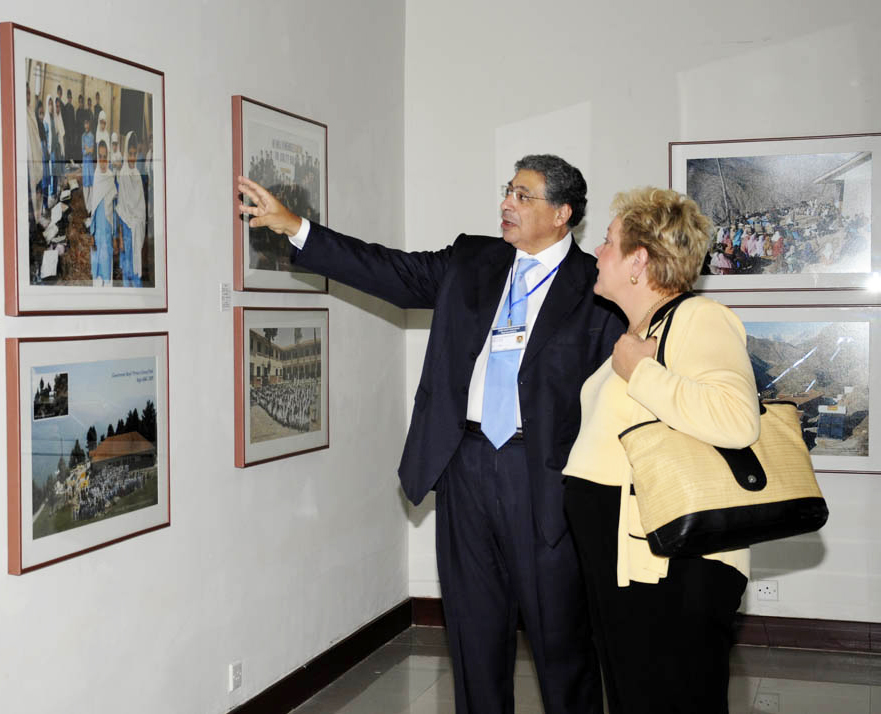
Photography and Drawing Exhibition on Pakistan 2005 Earthquake “Rebuilding Together: With Dignity and Hope”

Tarik Selim, Chief of Party, USAID Pakistan Earthquake Reconstruction and Rehabilitation Program, explaining about the photograph to Karen Freeman, USAID Deputy Director for Pakistan, at a photo exhibition “Rebuilding Together: With Dignity and Hope” sponsored by USIAD at Pakistan National Council of Arts (PNCA) in Islamabad.